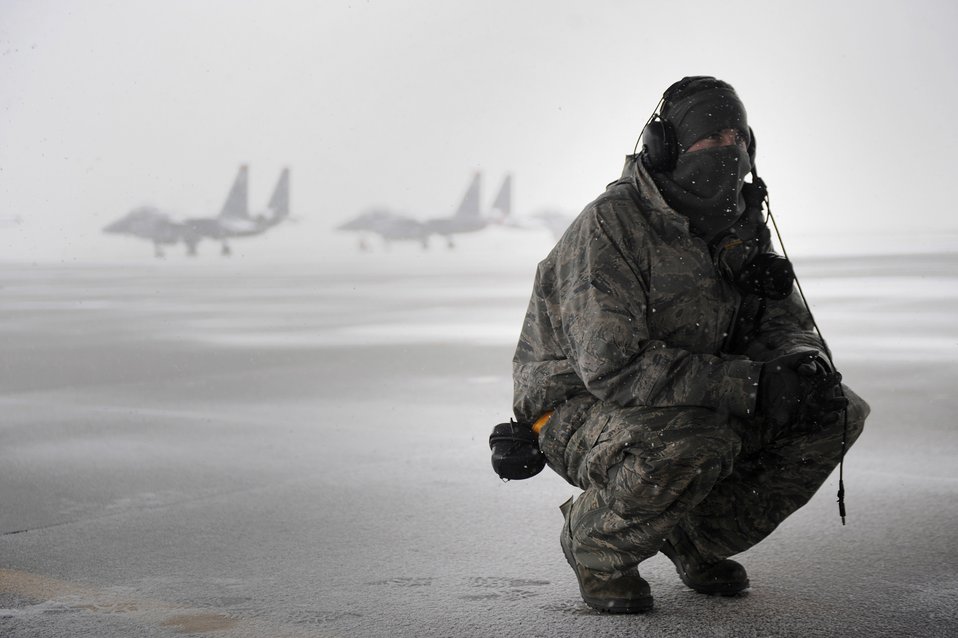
Try to keep warm

Senior Airman Stephen Held takes a break from the snow during an exercise Nov. 21, 2010, on the flightline at Mountain Home Air Force, Idaho. Airman Held is a crew chief with the 391st Fighter Squadron.